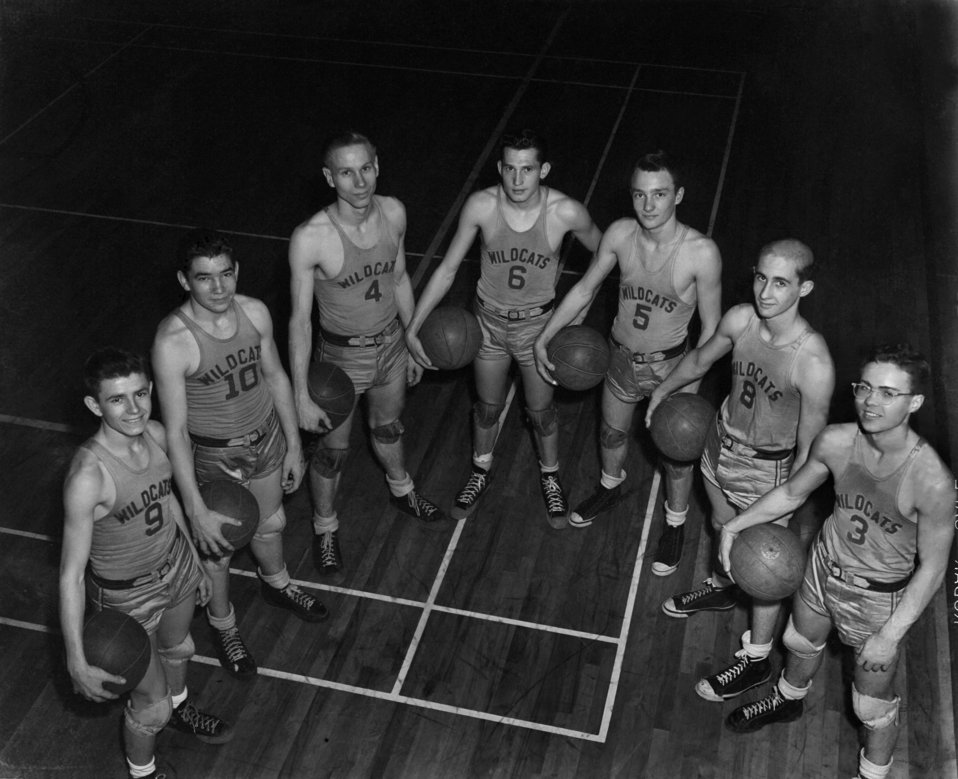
Oak Ridge High School Baketball Team

3228-2 DOE photo by Ed Westcott
Oak Ridge Tennessee 1-8-1947